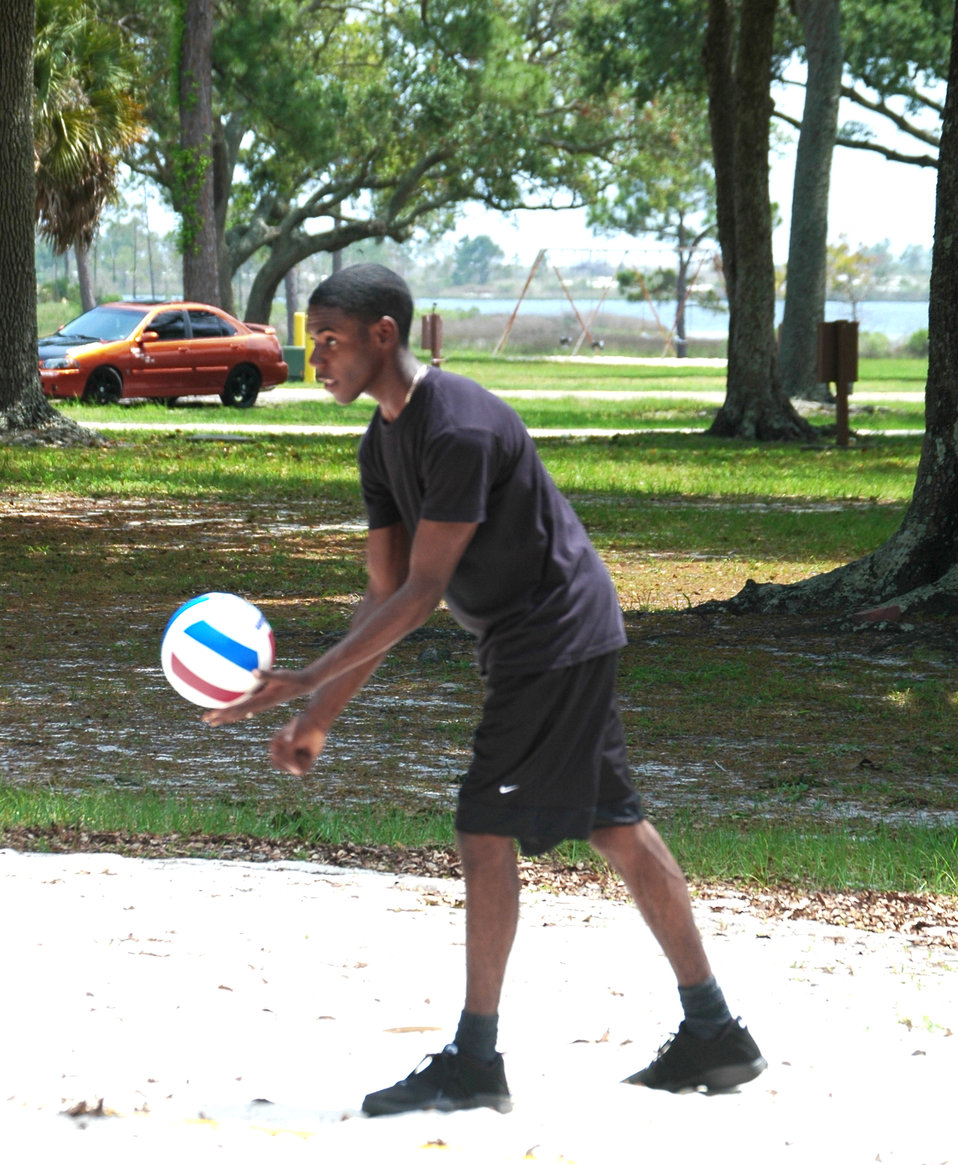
Airmen help Florida youth see inner potential

Airman 1st Class Denton Williams prepares to serve during a volleyball game at Heritage Park May 5 in Tyndall Air Force Base, Fla. The volleyball game was hosted by 325th Security Forces Squadron members to provide some extracurricular activity for 10 youths going through rehabilitation at the Liberty Unit for Specialized Treatment program located in Bristol, Fla. Airman Williams is assigned to the 325th SFS.